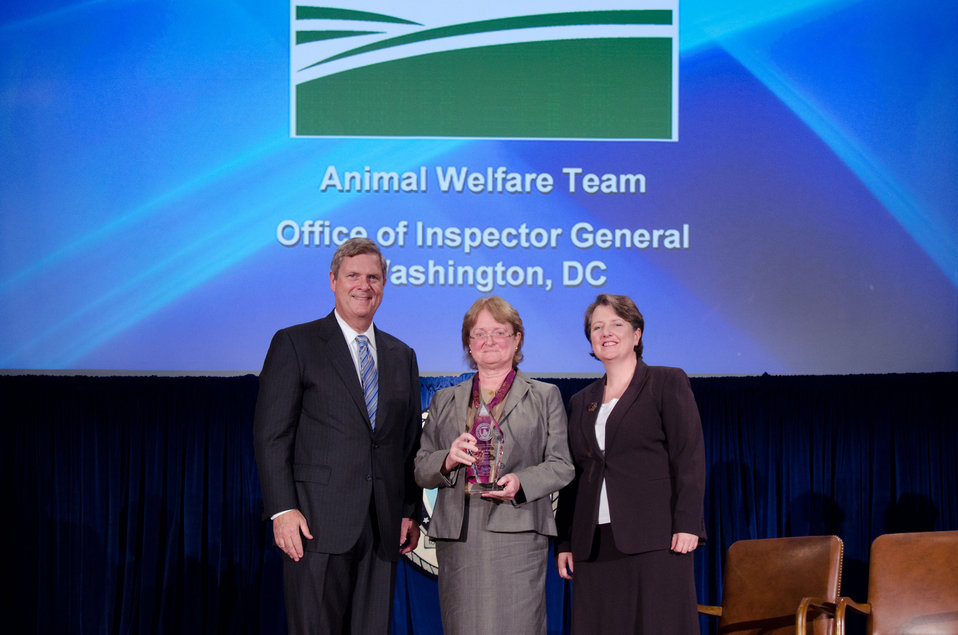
Agriculture Secretary Tom Vilsack (l) and Deputy Secretary Kathleen Merrigan (r), presents the Award to Animal Welfare Team, Office of Inspector General, Washington DC. Barbara B. Gladfelter, Group Leader. For outstanding audit and investigation work on the sensitive issue of animal abuse. On Wednesday, September 14, 2011 in the Jefferson Auditorium at the US Department of Agriculture in Washington, DC.